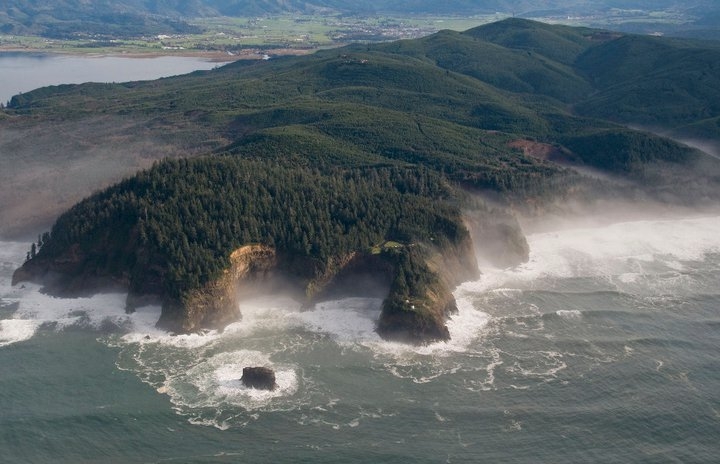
Cape Meares National Wildlife Refuge, OR
(Photo: Roy W. Lowe/USFWS)

June 8, 2012 was World Oceans Day.